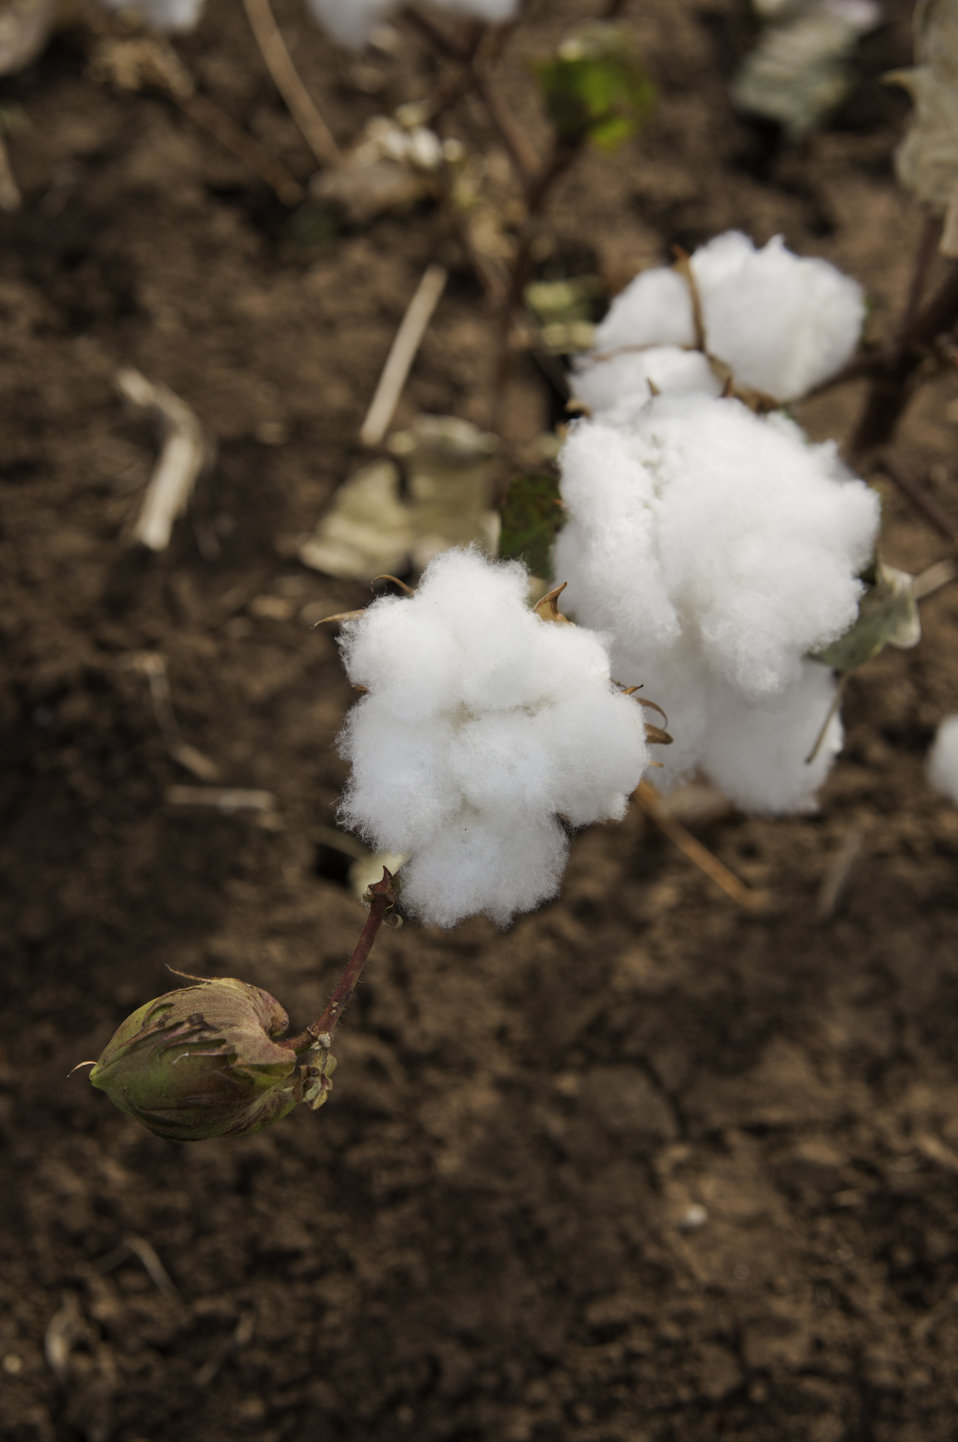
Dry Land cotton grows on a farm in Navasota, TX on Aug. 23, 2013.